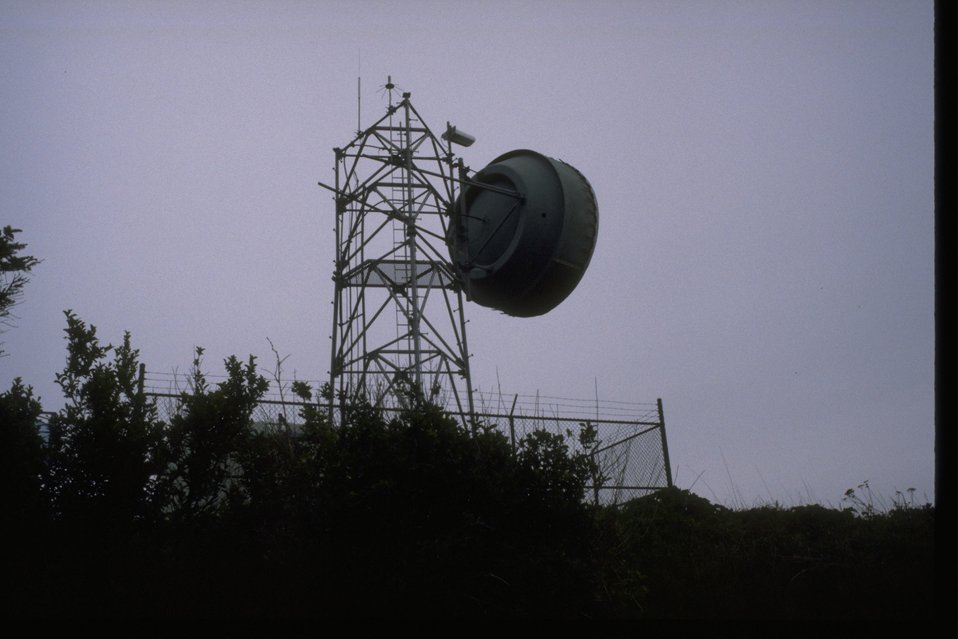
Communications site on Communication Hill.